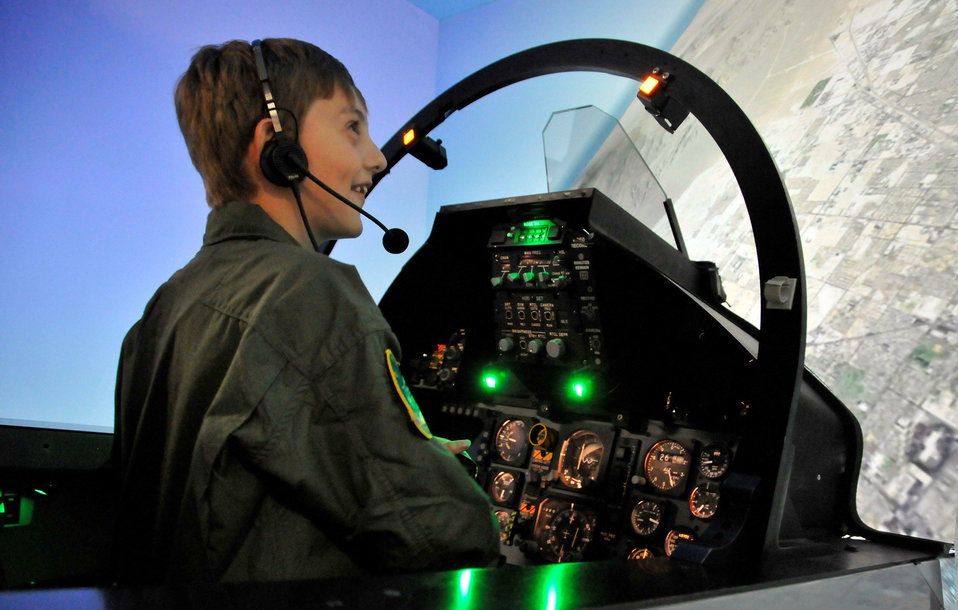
Child becomes pilot for a day

Isaac Ezell takes a ride in an F-15 Eagle simulator April 9, 2010, at the 95th Fighter Squadron while participating in the Pilot for a Day program at Tyndall Air Force Base, Fla.